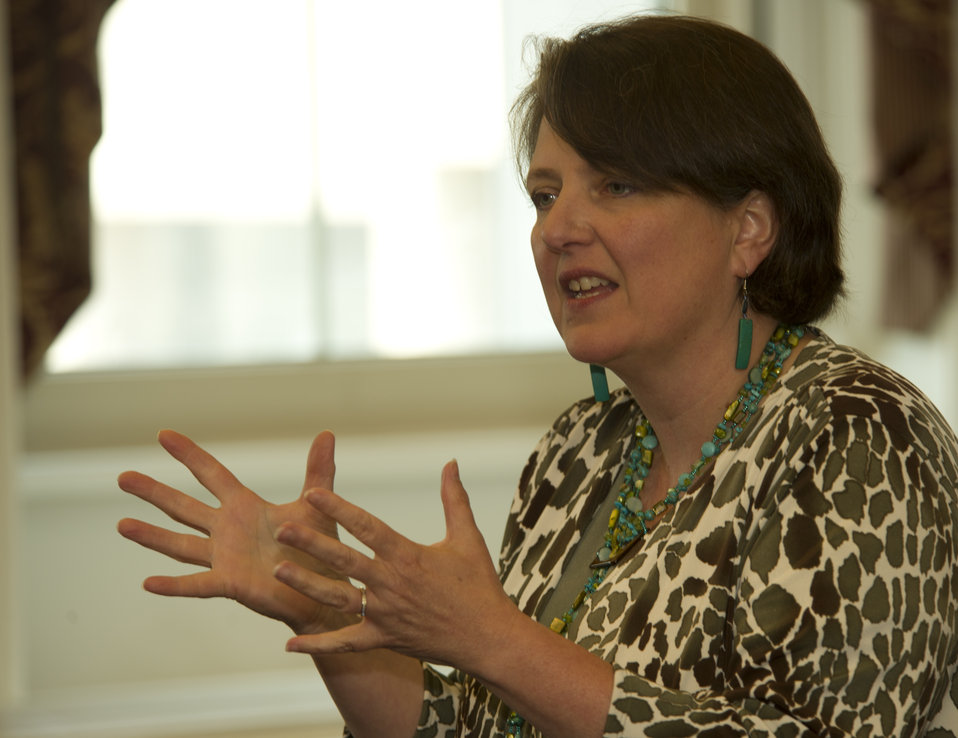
Deputy Agriculture Secretary Kathleen Merrigan speaks to the White House Forum on Regional Innovation in Rural America at the White House, Eisenhower Executive Office Building in Washington, D.C., on Wednesday, June 13, 2012.